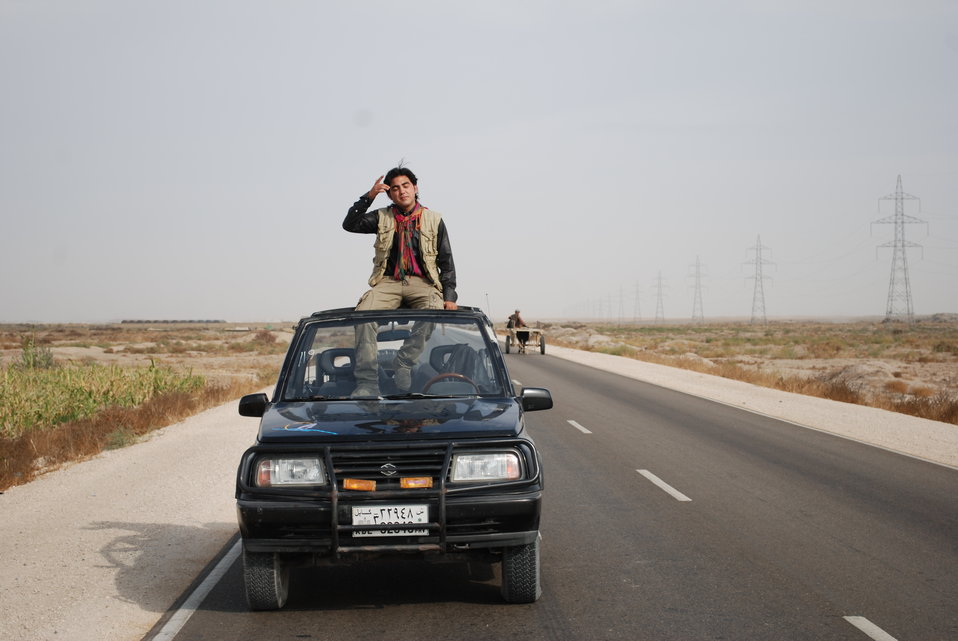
'On the Road' in Balkh Province